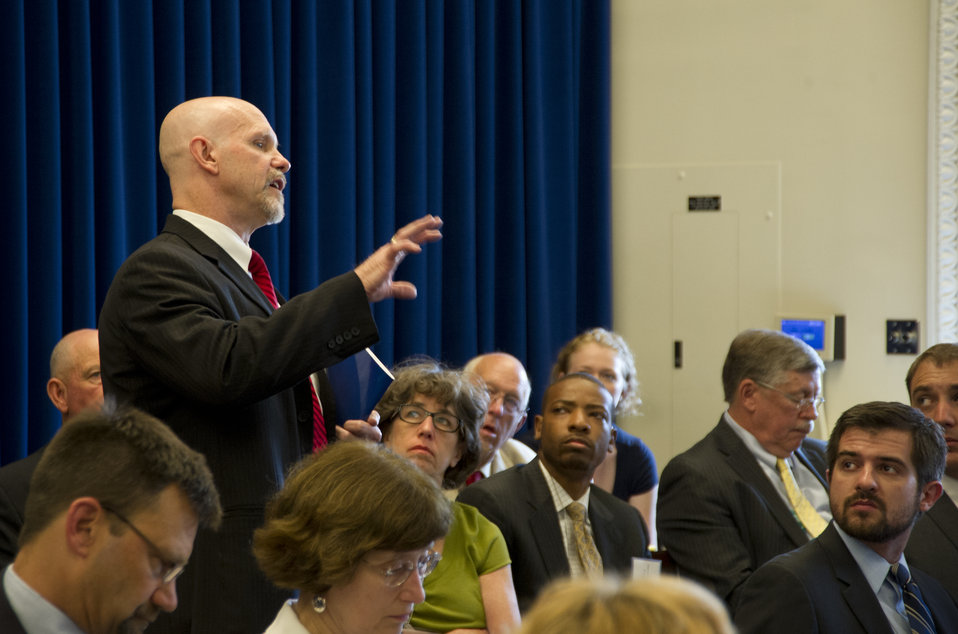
A member of the audience makes remarks at the White House Forum on Regional Innovation in Rural America at the Eisenhower Executive Office Building, in Washington D.C., on Wednesday, June 13, 2012.